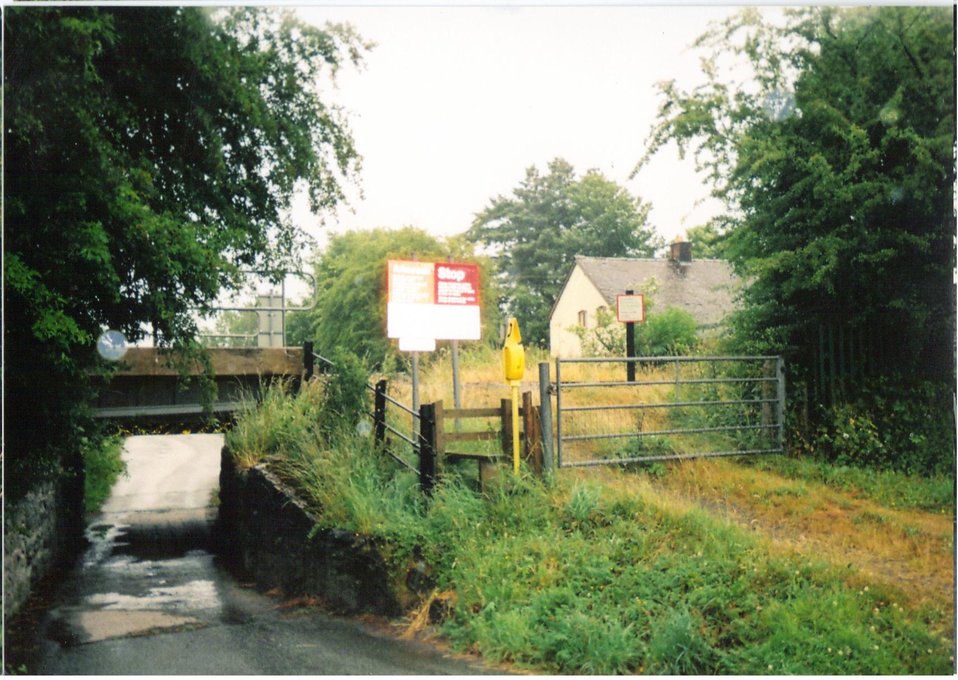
A picture I took of the village of Caersws on my holiday there in 2010. I donate it to the public domain.